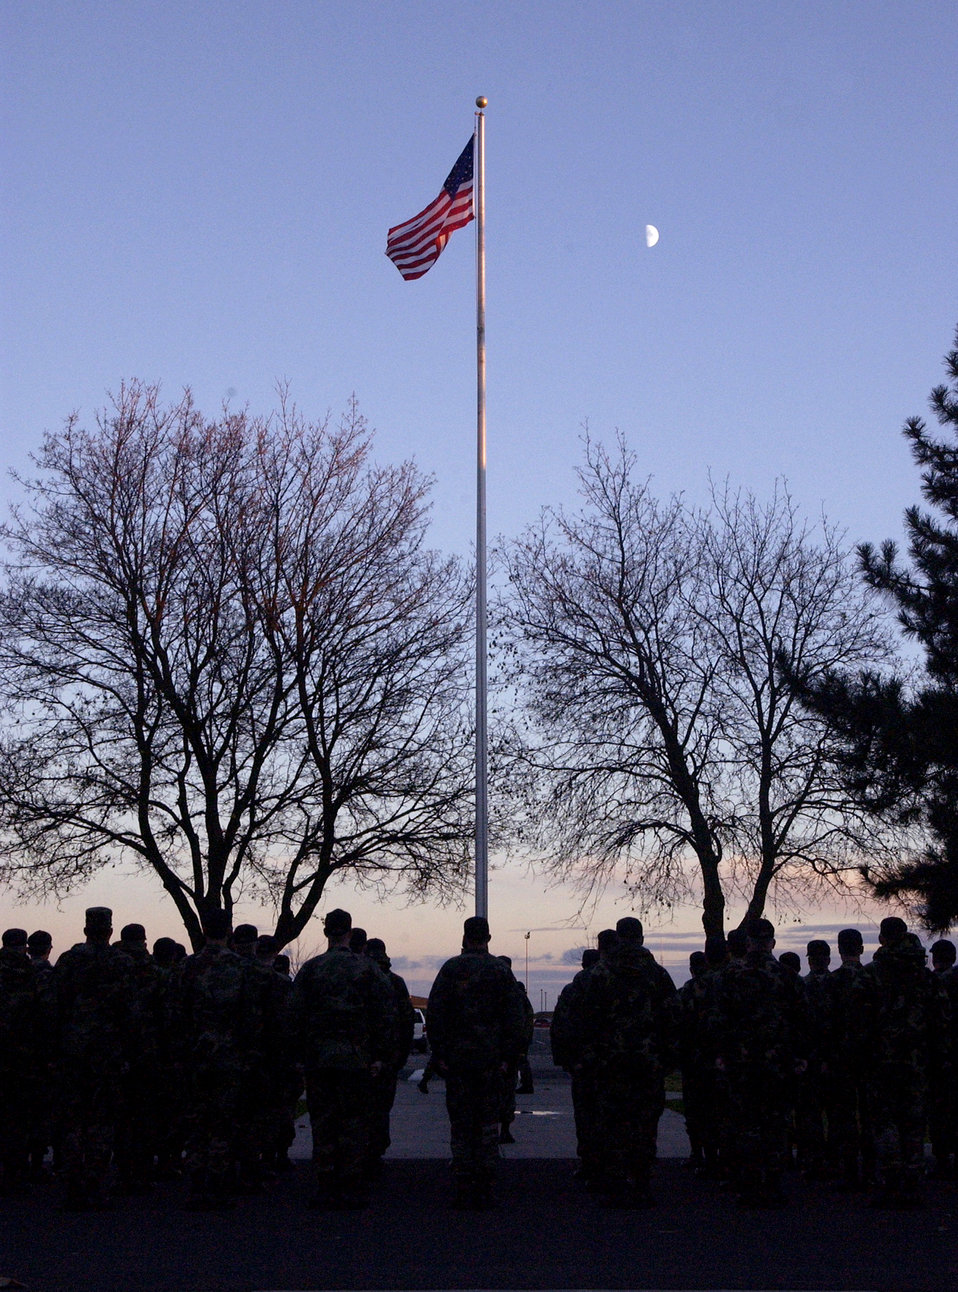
Retreat by the moonlight

FAIRCHILD AIR FORCE BASE, Wash. – Standing under a half-moon at dusk here Nov. 19, Airmen from the 92nd Aircraft Maintenance Squadron participate in a retreat ceremony.